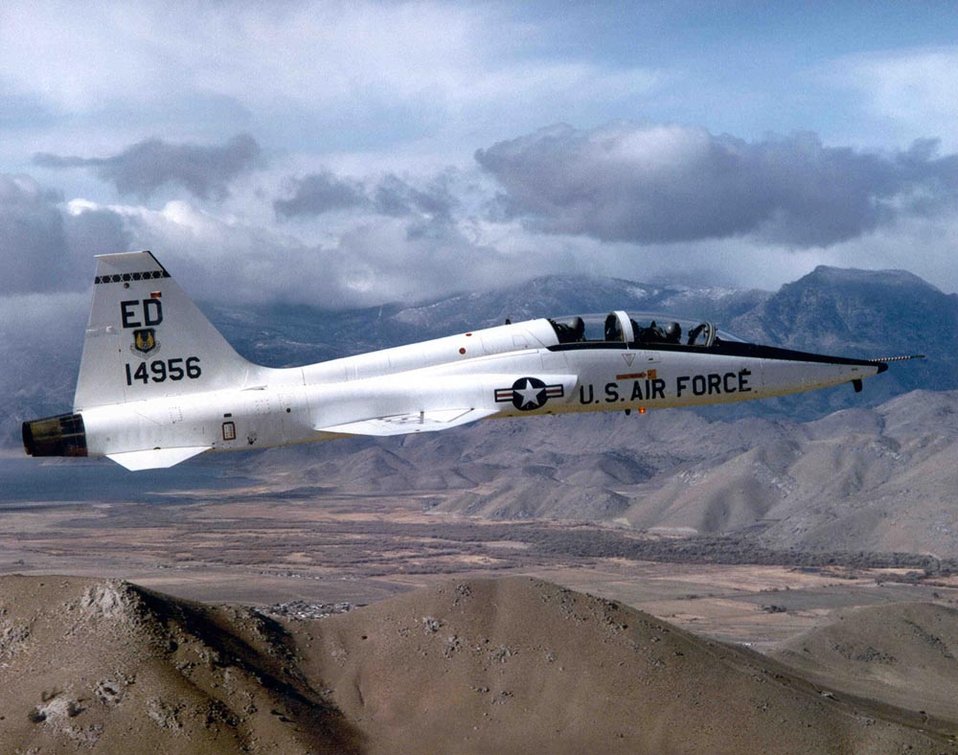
Test Talon

FILE PHOTO -- Test pilots and flight test engineers are trained in T-38As at the U.S. Air Force Test Pilot School at Edwards Air Force Base, Calif. Air Force Materiel Command uses T-38As to test experimental equipment such as electrical and weapon systems. The Alliance agreement allows qualified NASA Dryden Flight Research Center pilots to fly particular Air Force Flight Test Center aircraft, like the T-38 Talon, and vice versa.